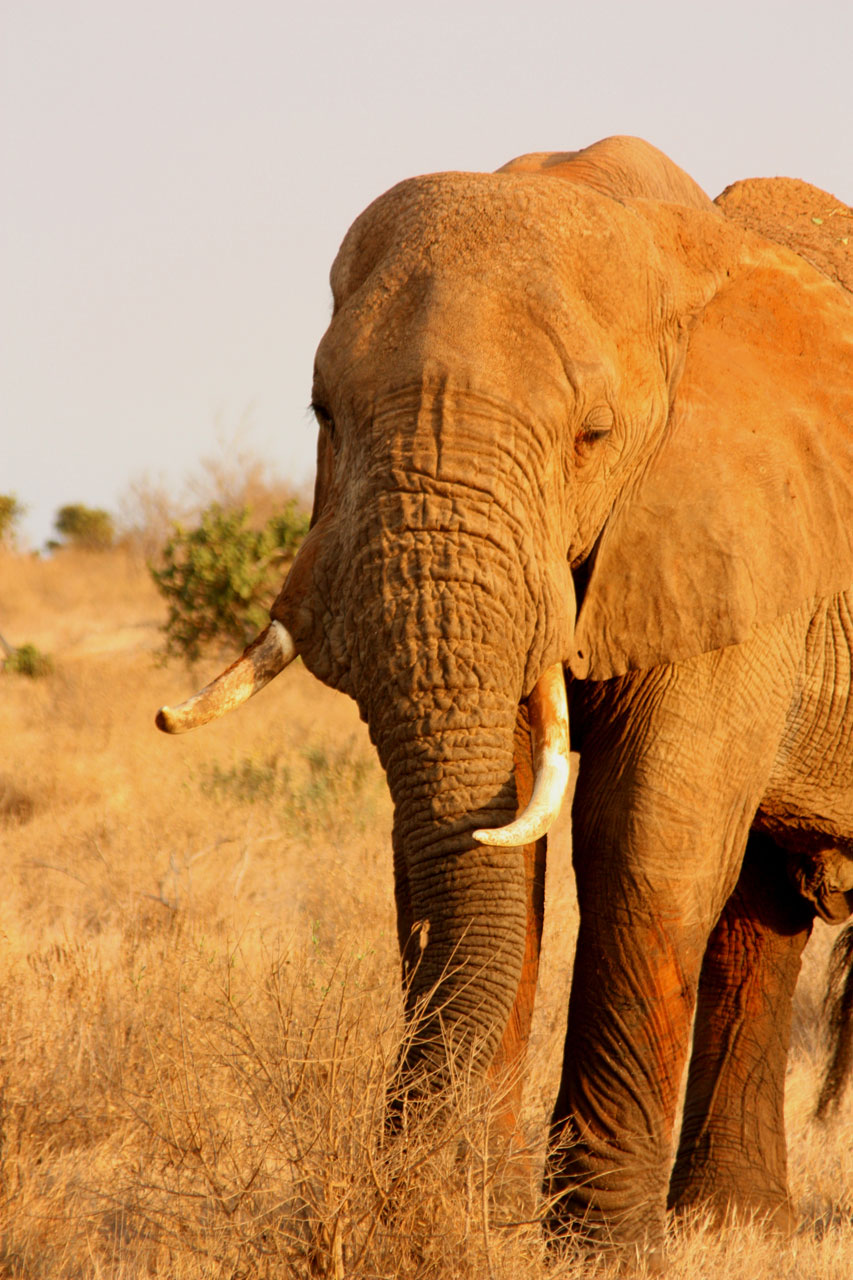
Elephant in tsavo.